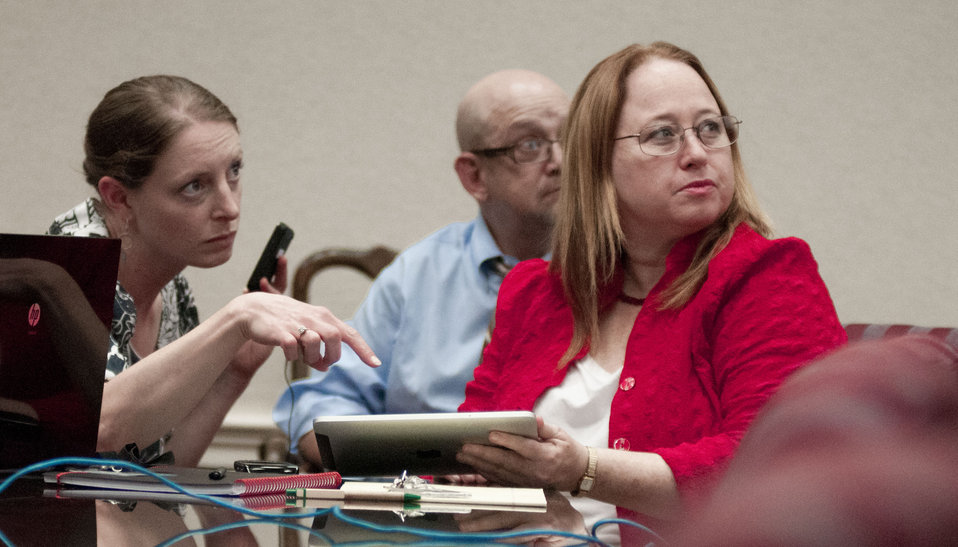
Left to right, Special Assistant to the Undersecretary for Marketing and. Regulatory Programs Elanor Starmer, Organics Specialist Mark Lipson, and Small and Beginning Farmers Program Lead Poppy Davis compare Twitter messages between Agriculture Deputy Secretary Kathleen Merrigan's iPad and what is displayed on a big screen display using hosting software during a live Twitter chat focused on the Department’s support of local and regional food systems and the recent release of the 2.0 version of the Know Your Farmer, Know Your Food Compass on Tuesday, July 24, 2012, in Washington, D.C. Deputy utilized her staff and other subject matter experts to provide useful answers to questions from the public during the #ASKUSDA Virtual Office Hours on Local Food.